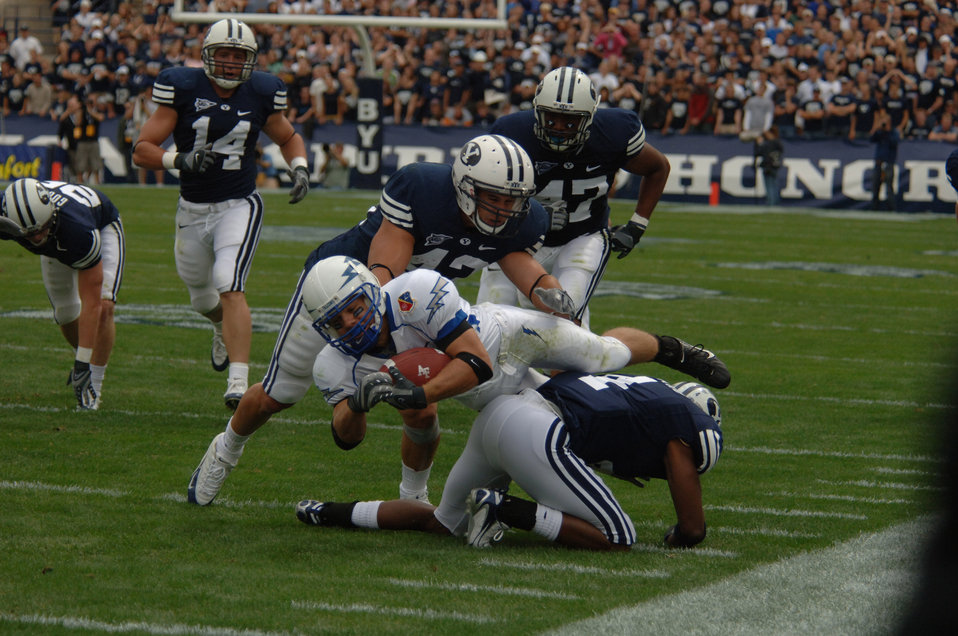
Falcons eye history after BYU loss, seeks redemption at Annapolis

Air Force wide receiver Chad Hall gets sandwiched between Brigham Young linebacker Shawn Doman, 42, and defensive back Brandon Howard, 4, during BYU's 31-6 win Sept. 22, in Provo, Utah. The Falcons converted only 6-of-18 third down attempts.